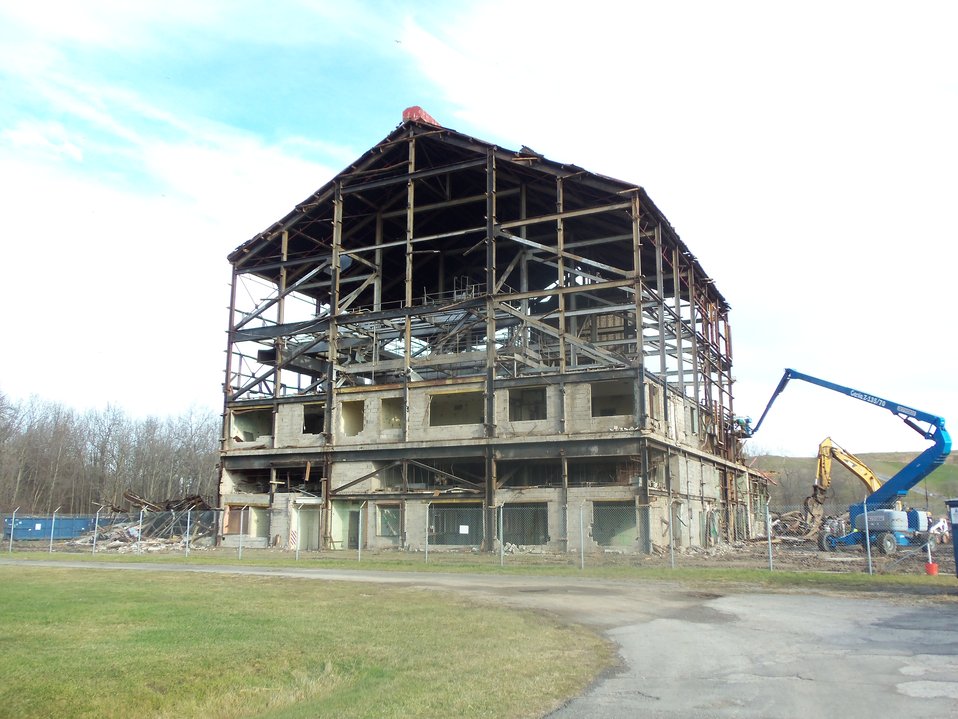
BLDG 401 DECONSTRUCTION OF SHELL

Activities from the Niagara Falls Storage Site, which is associated with the former Lake Ontario Ordnance Works. Formerly Utilized Sites Remedial Action Program (FUSRAP), a program initiated in 1974 to identify, investigate and clean up or control sites that were part of the Nation's early atomic energy and weapons program. Activities at the sites that are eligible for FUSRAP were conducted by Manhattan Engineer District (MED) or the Atomic Energy Commission (AEC), both predecessors of the Department of Energy (DOE). The U.S. Army Corps of Engineers was assigned management of FUSRAP by Congress in 1997.